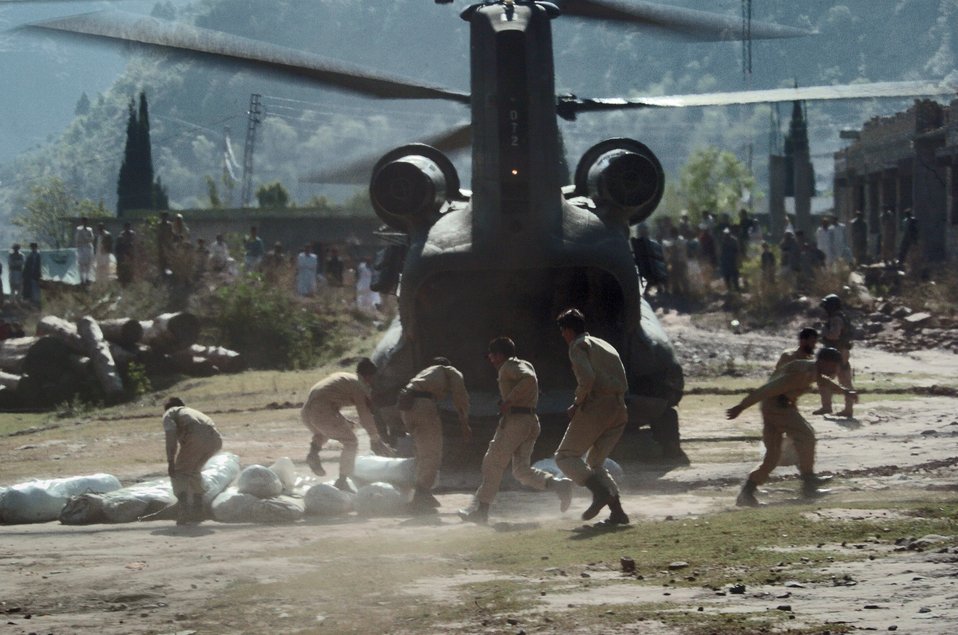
Welcome relief

BALIKOT, Pakistan -- Pakistani Soldiers carry tents away from a U.S. Army CH-47 Chinook helicopter here Oct. 19. The United States is taking part in the multinational effort to provide humanitarian assistance and support to Pakistan and parts of India and Afghanistan following the devastating Oct. 8earthquake.